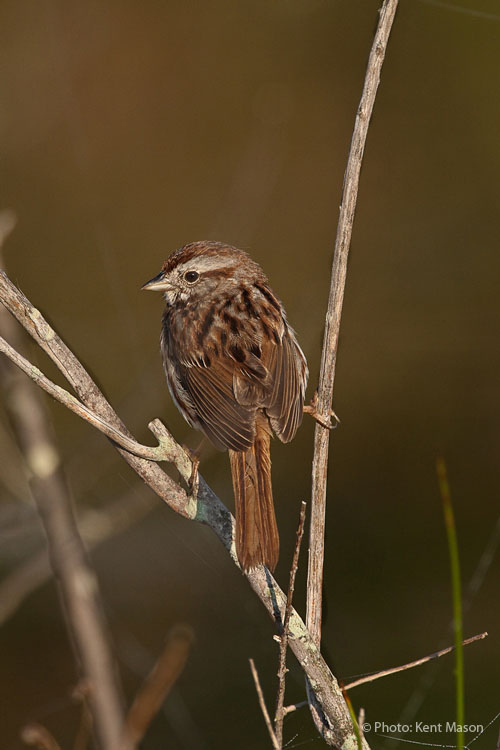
The Balance of Nature

Canaan Valley National Wildlife Refuge's scrublands provide ideal habitat for this song sparrow.